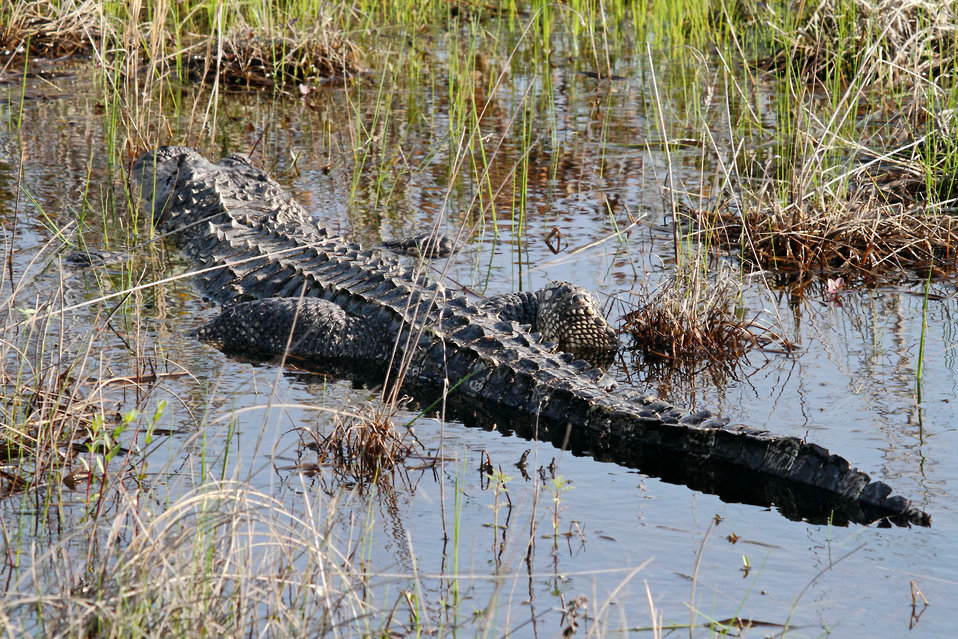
American Alligator getting out of the water

American Alligator leaving the water